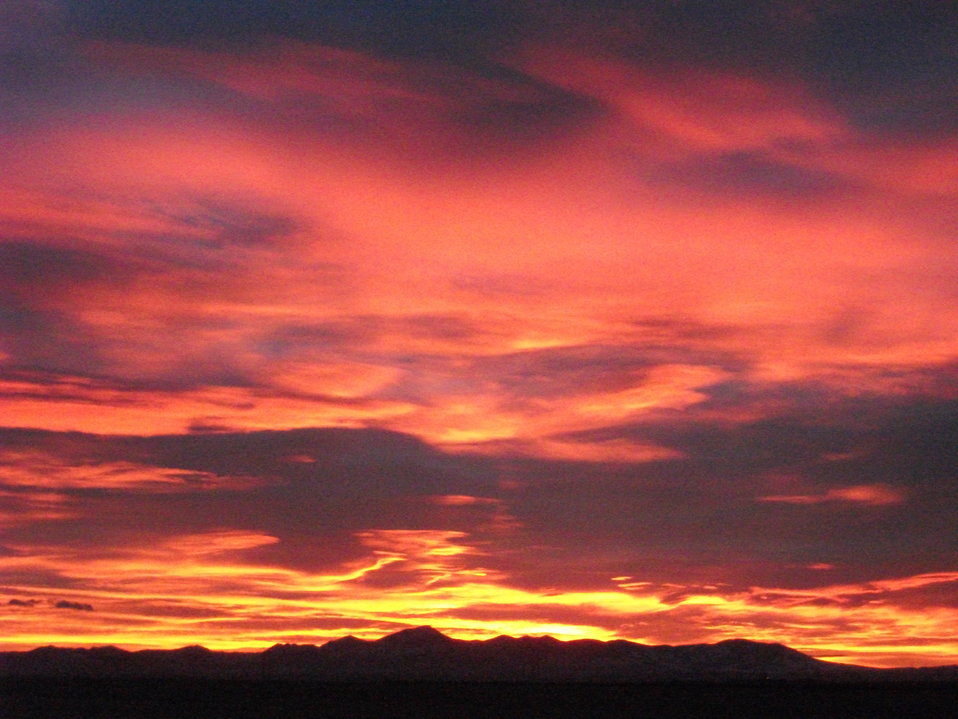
Sunrise On The Refuge

We get some amazing sunrises at the Refuge. You can see why Montana is nicknamed 'Big Sky Country!'